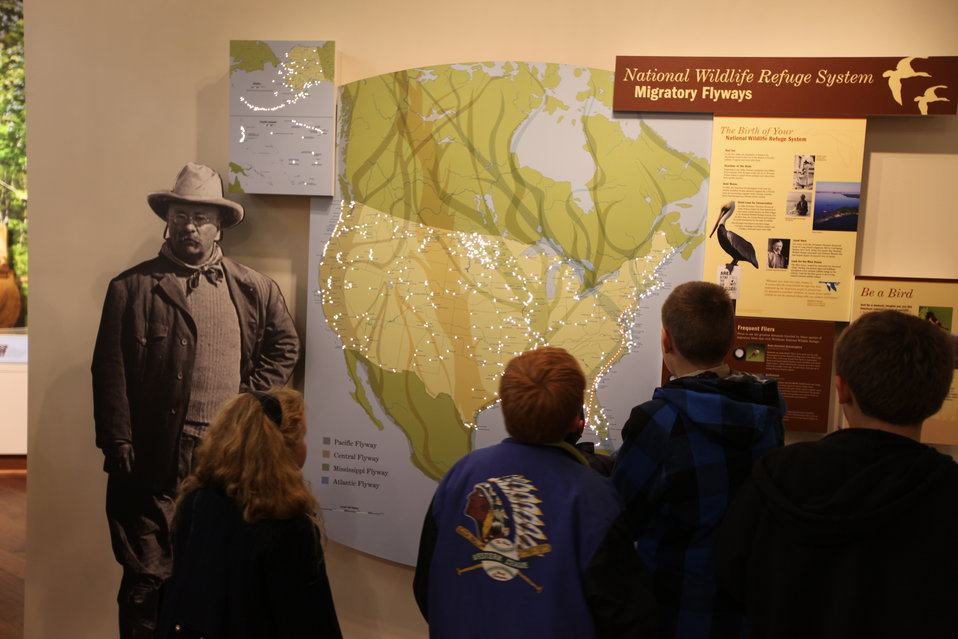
Kids and map

Kids interacting with exhibits.